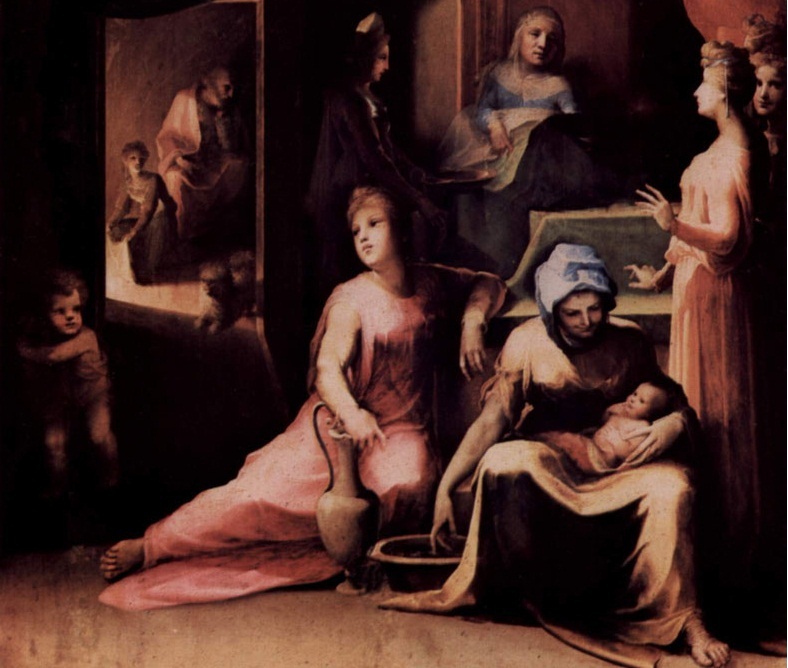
Birth-of-the-virgin-detail-domenico-beccafumi-c-1543